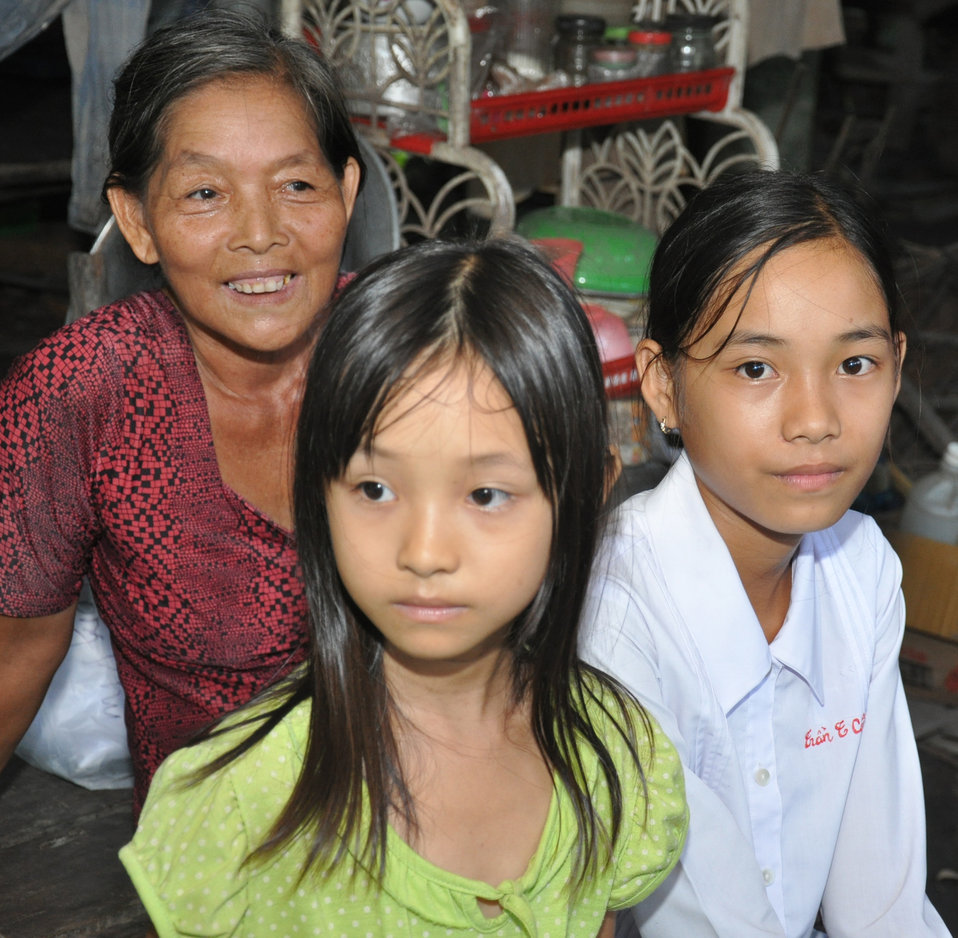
Supporting Girls Education in Vietnam